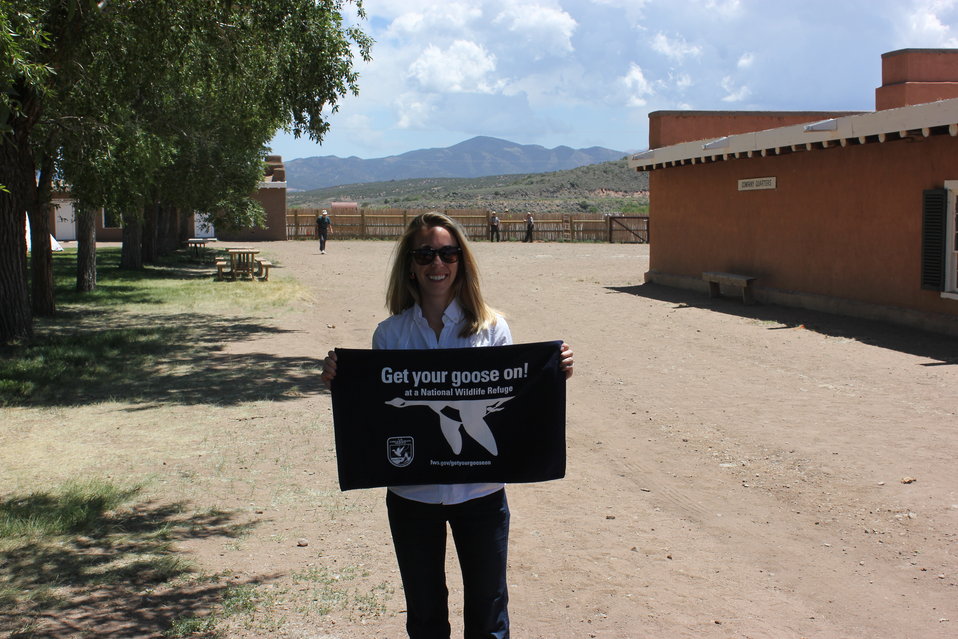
Kate Kelly, Deputy Director of Communications for the Department of Interior, Gets Her Goose On!